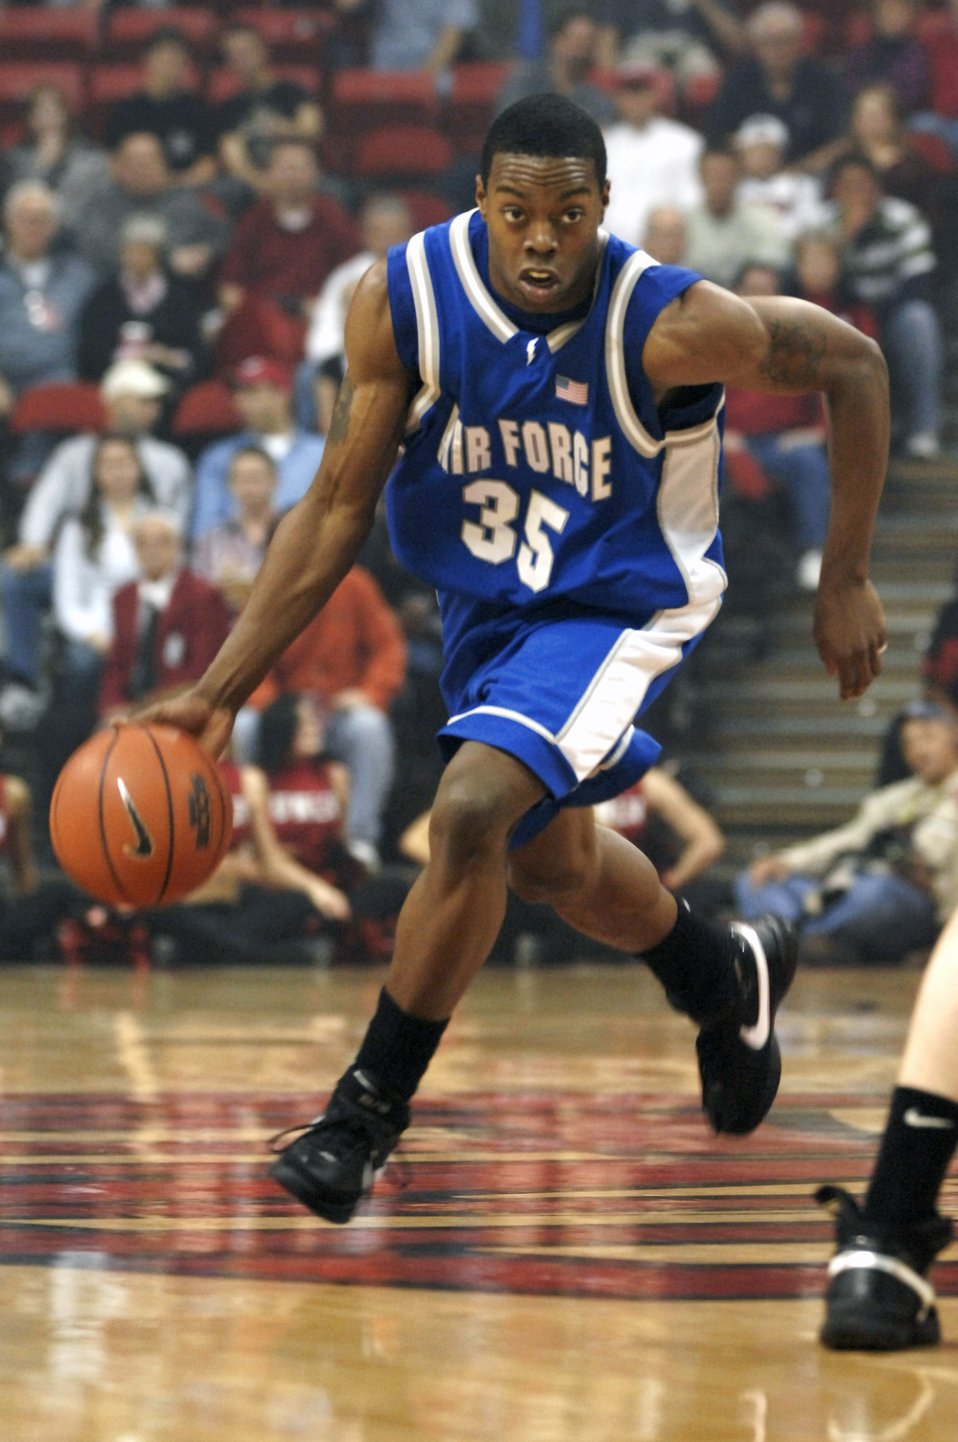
Coming up the court

Air Force Academy Cadet Evan Washington, a Falcon point guard, brings the ball up the court during a game against the University of Nevada-Las Vegas Rebels Feb. 12 in Las Vegas. The Falcons played a hard-fought game but ultimately lost to the Rebels 58-51.